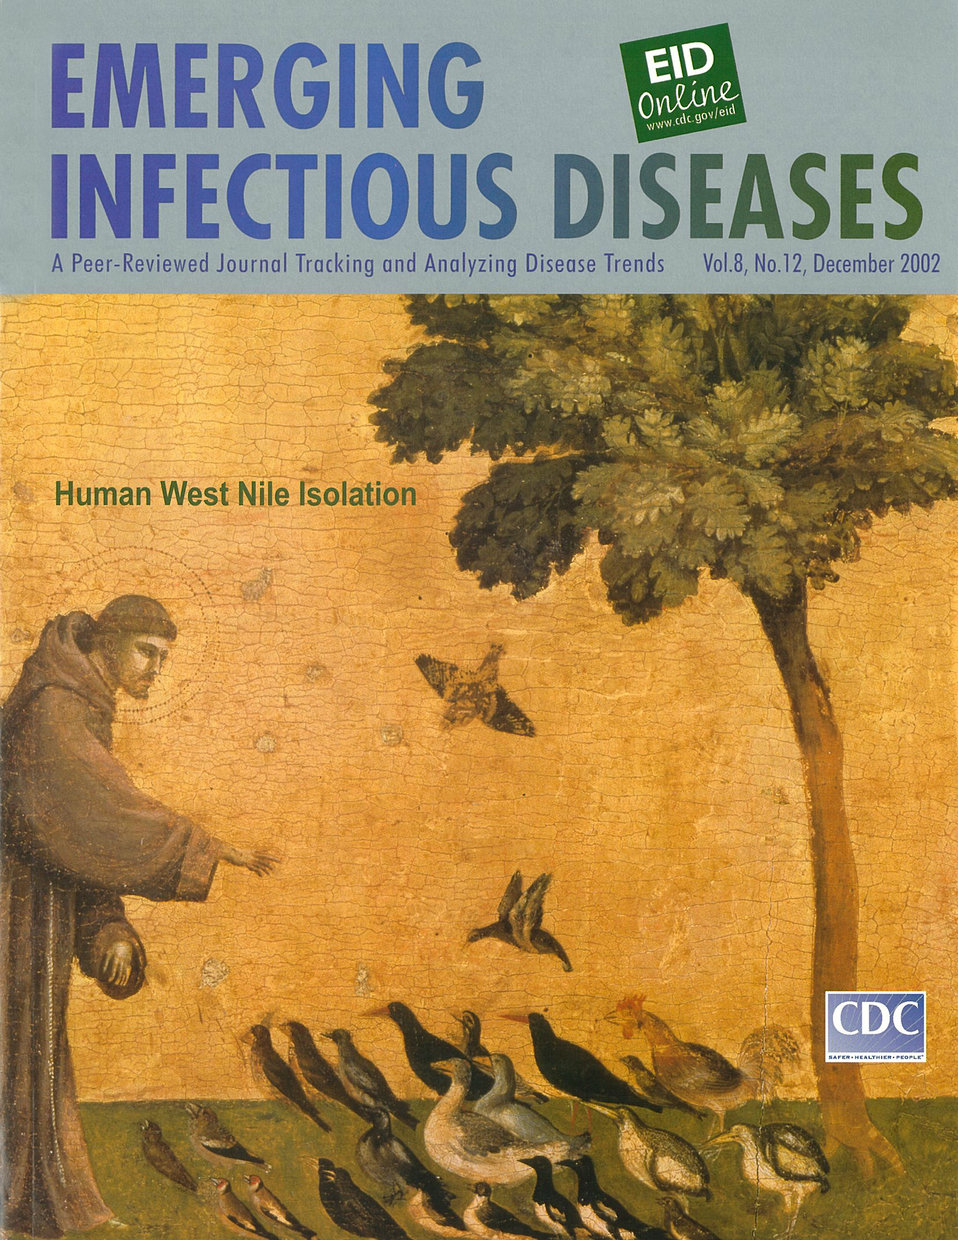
Emerging Infectious Diseases (EID) cover artwork for Volume 8, Number 12, December 2002 issue.